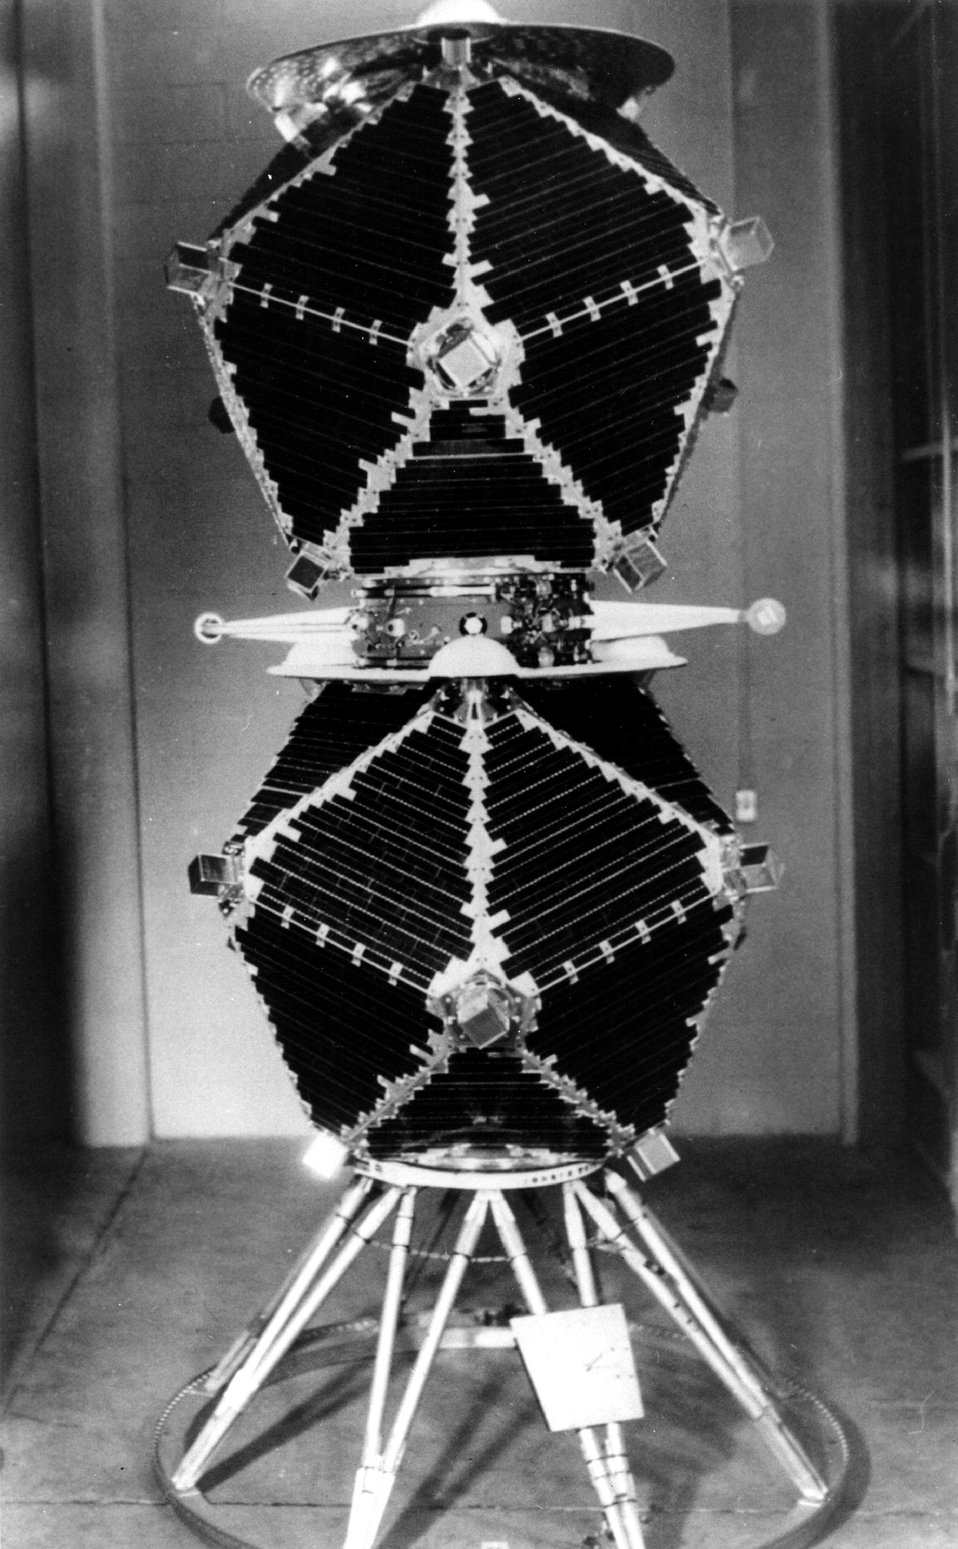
During mid-October, 1963, twin nuclear burst detection satellites were placed in orbit approximately 60,000 miles from earth as a part of the AEC-Department of Defense Vela Satellite program. c. 1963